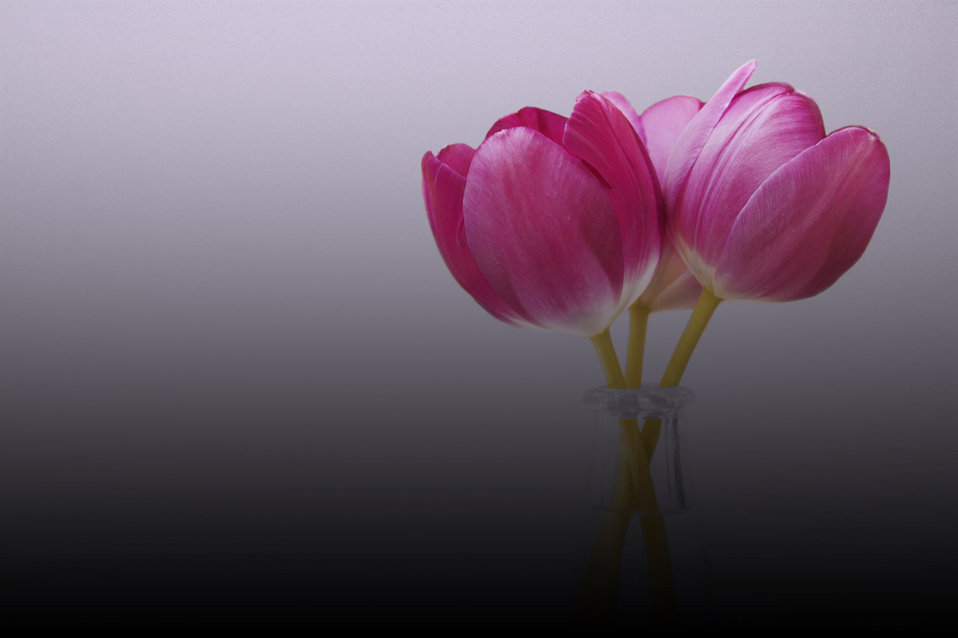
Tulips

Spring tulips.